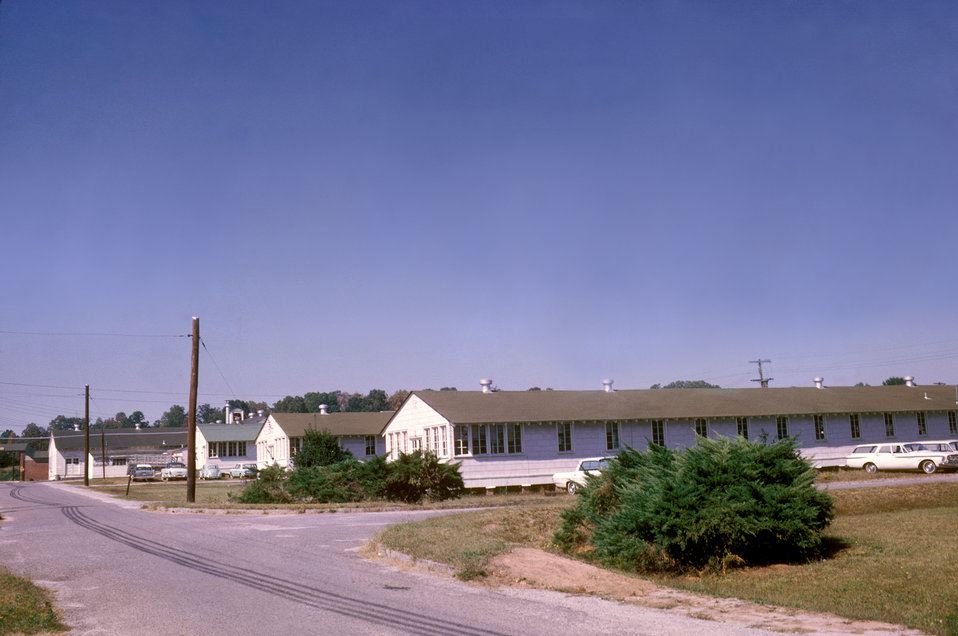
This 1963 photograph showed the exterior of several buildings on the Centers for Disease Control's Chamblee, Georgia campus.